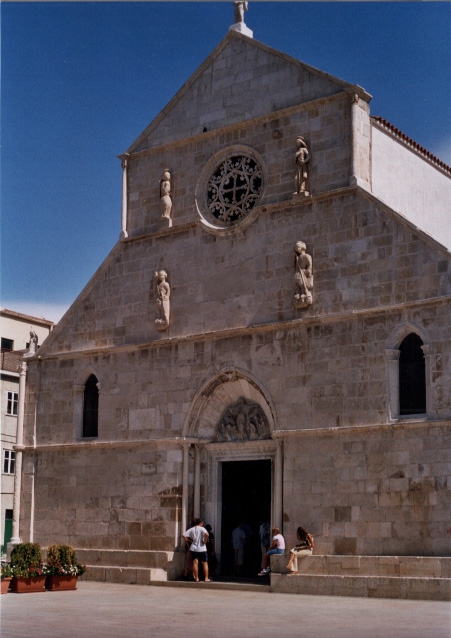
Italiano: Pag, Isola di Pag (Croazia) - basilica di S. Marjia Hrvatski: Zborna crvka Marijinog uznešenja St. Mary's Basilica, Pag - Island of Pag, Croatia